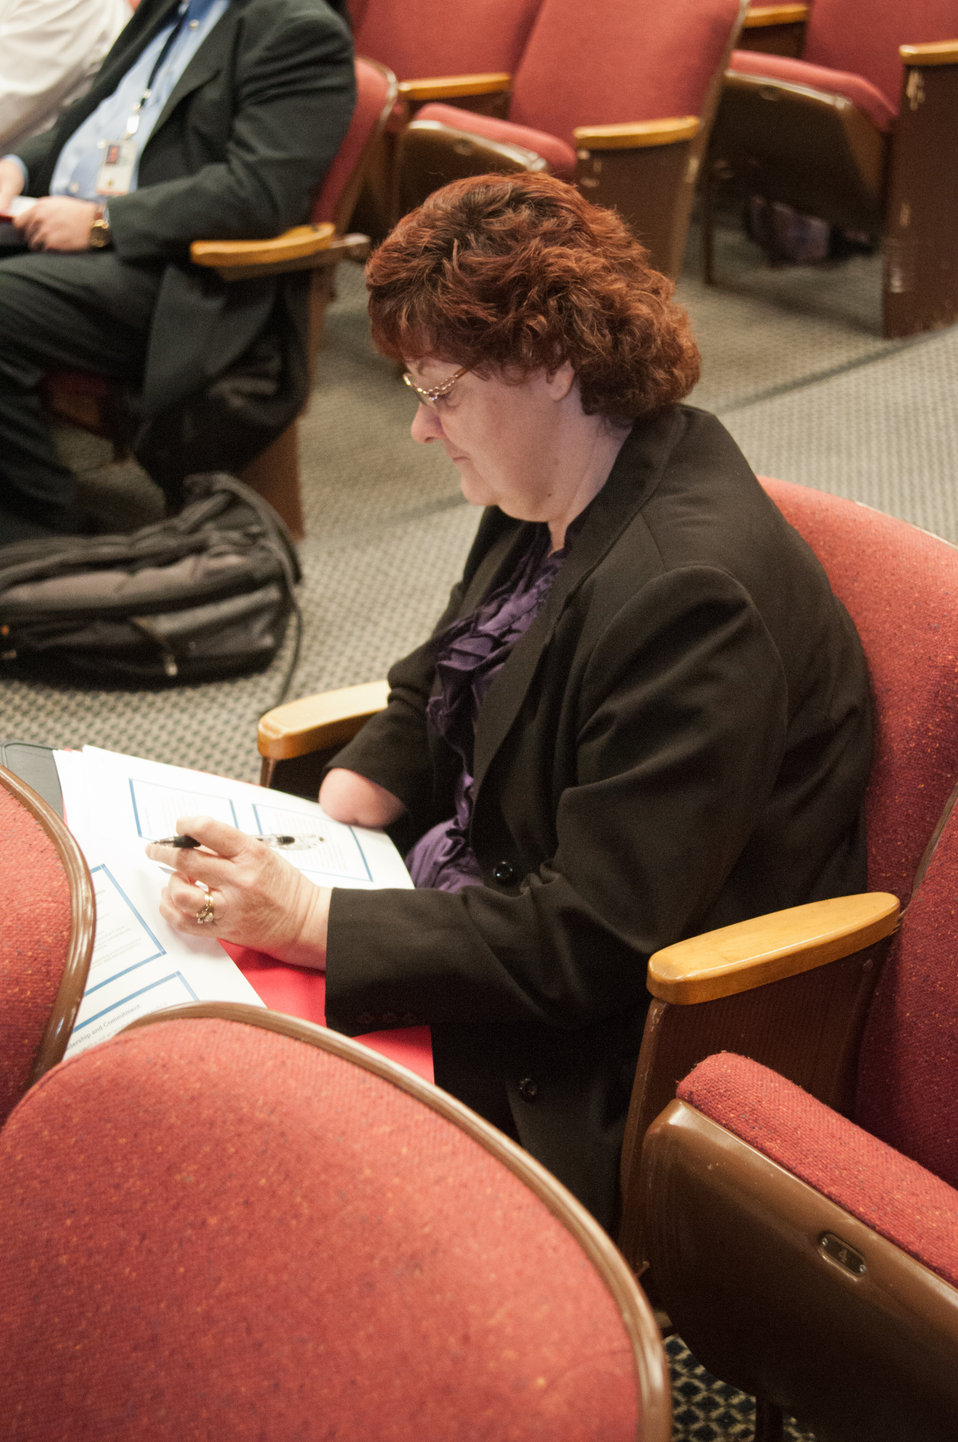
U.S. Department of Agriculture (USDA) Food Safety Inspection Service (FSIS) Selective Placement Program Manager Sharon Randle takes notes USDA's Office of Human Resources Management (OHRM) Disability Employment Program Team Training at USDA in Washington, D.C. on Tuesday, May 14, 2013.